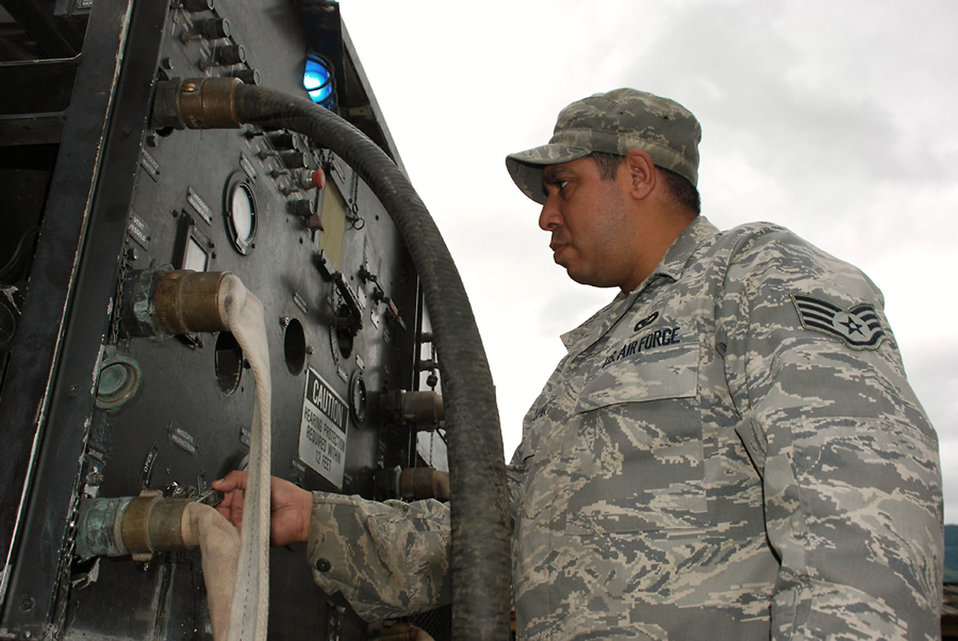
Servicemembers provide water to flood-affected community

Staff Sgt. Nick Luna works on a water filtration machine Oct. 29 at La Paz, Honduras. Servicemembers from Joint Task Force-Bravo are participating in a 10-day operation in a nearby community to filter well water. The well water became undrinkable after more than a weeklong stretch of rain caused flooding in the area. Sergeant Luna is assigned to Soto Cano Air Base, Honduras, and deployed from Dyess Air Force Base, Texas.